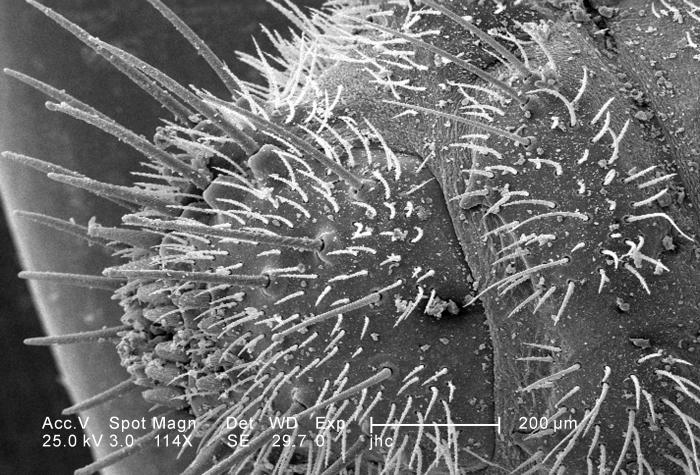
Under a low magnification of 114X, approximately twice that of PHIL 11795, this scanning electron micrograph (SEM) depicted the ventral abdominal surface of the larval staged antlion, sometimes referred to as a 'doodlebug', because of the trails it leaves in the soft sand as it hunts for prey. This arthropod, i.e., jointed legs, undergoes dramatic morphologic changes when it metamorphoses into a beautiful flying antlion lacewing.